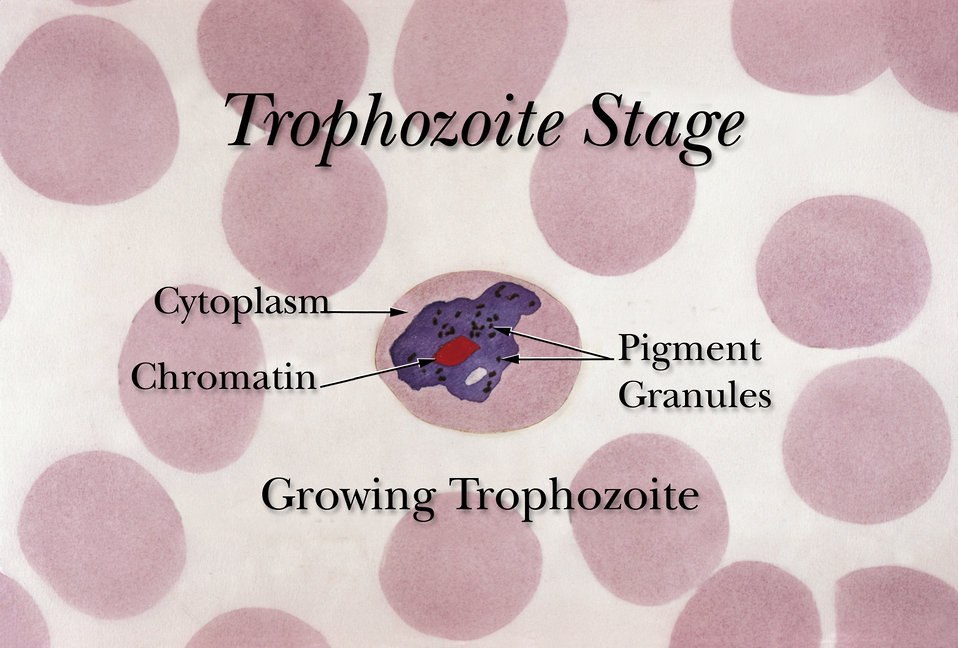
A growing erythrocytic trophozoite during the Plasmodium spp. life cycle.